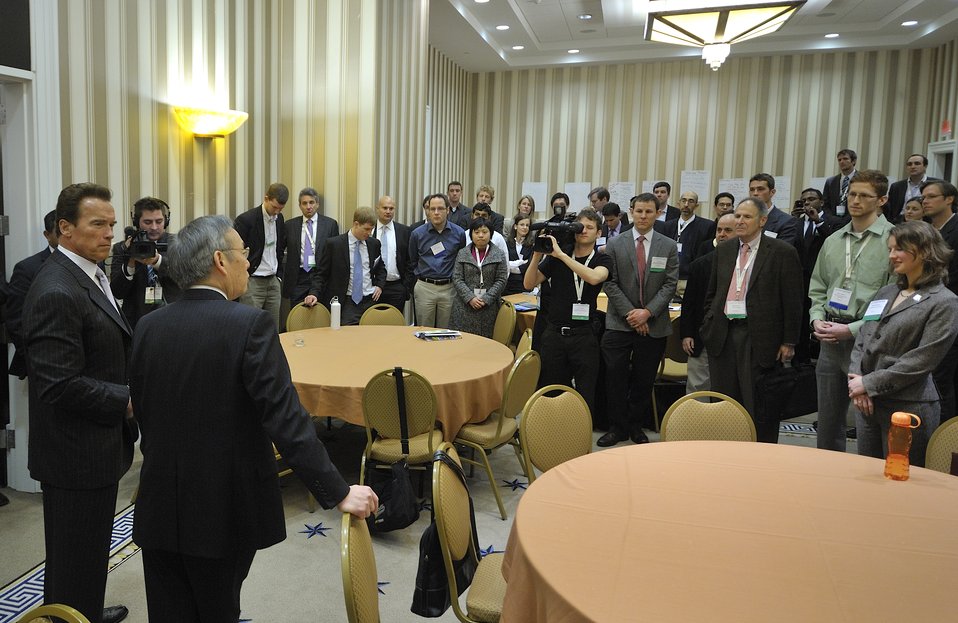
ARPA-E Energy Innovation Summit 2011, 8 of 83

Steven Chu, Secretary, United States Department of Energy and Arnold Schwarzenegger, Former Governor of California surprise graduate students who traveled to the summit.